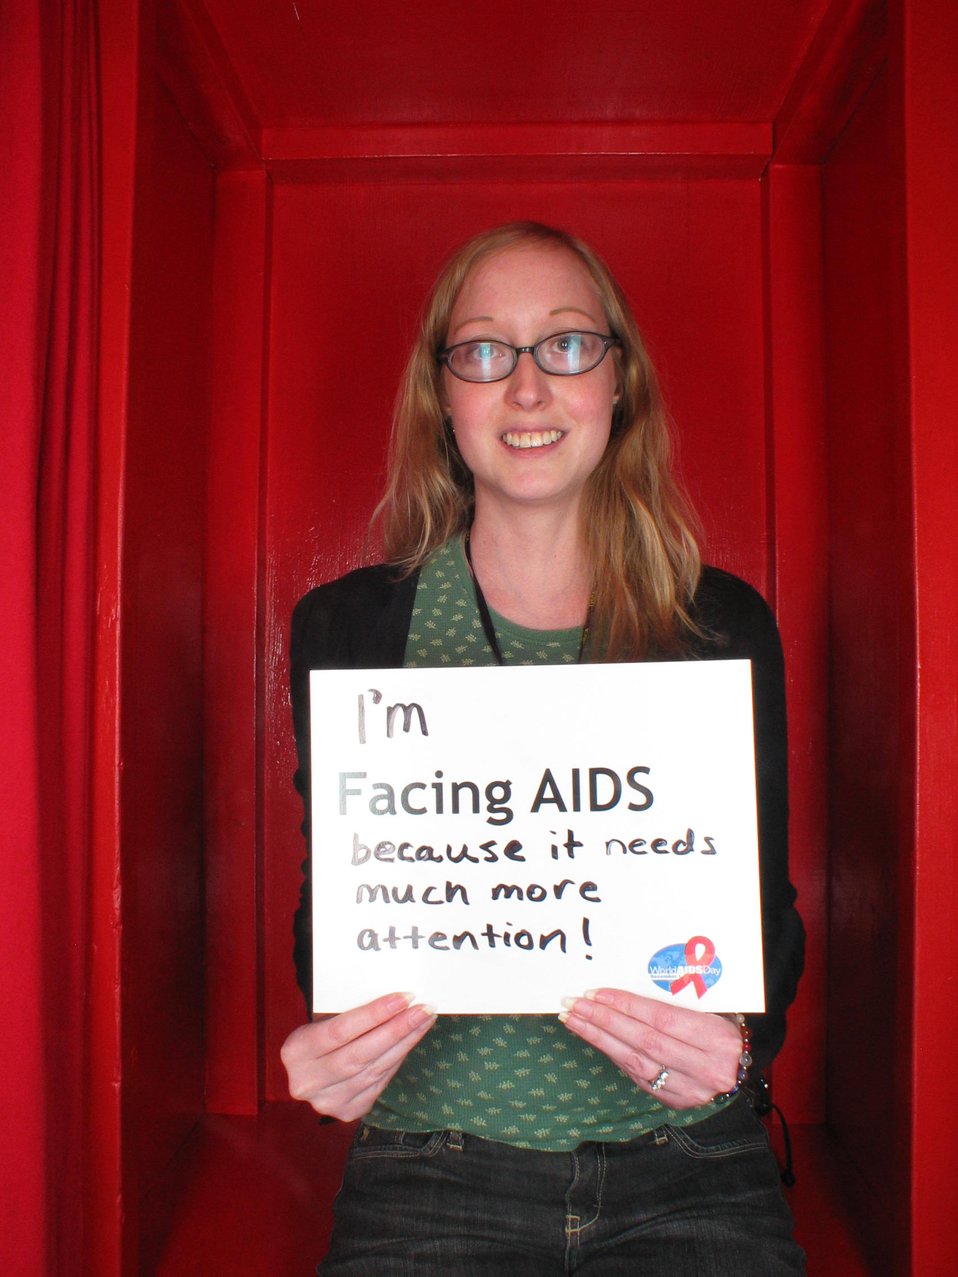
I'm Facing AIDS because it needs much more attention!